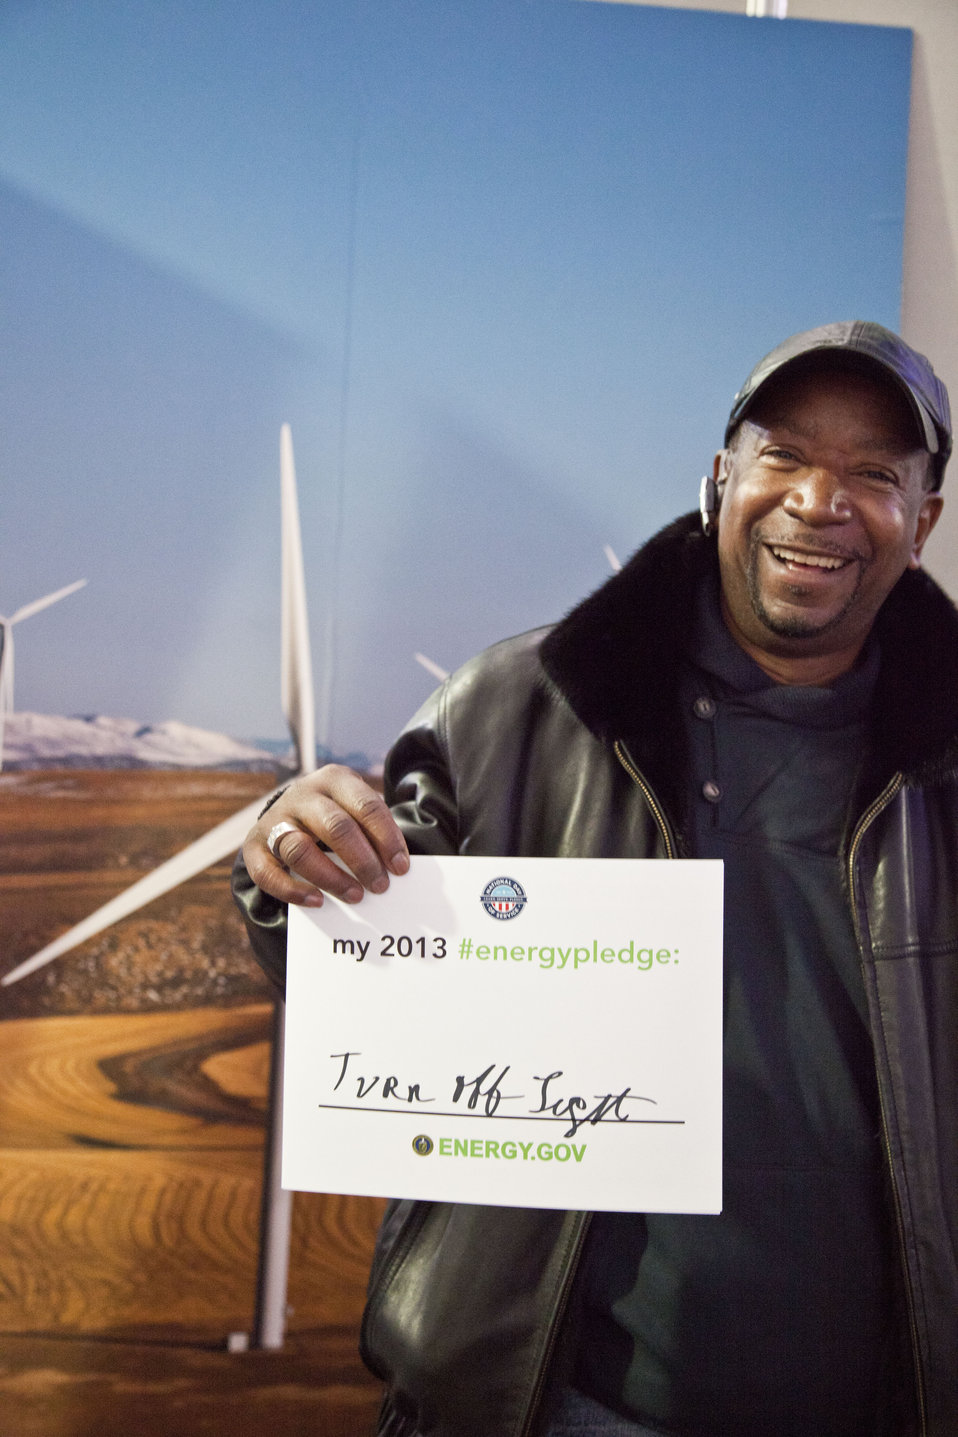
What's your #energypledge?